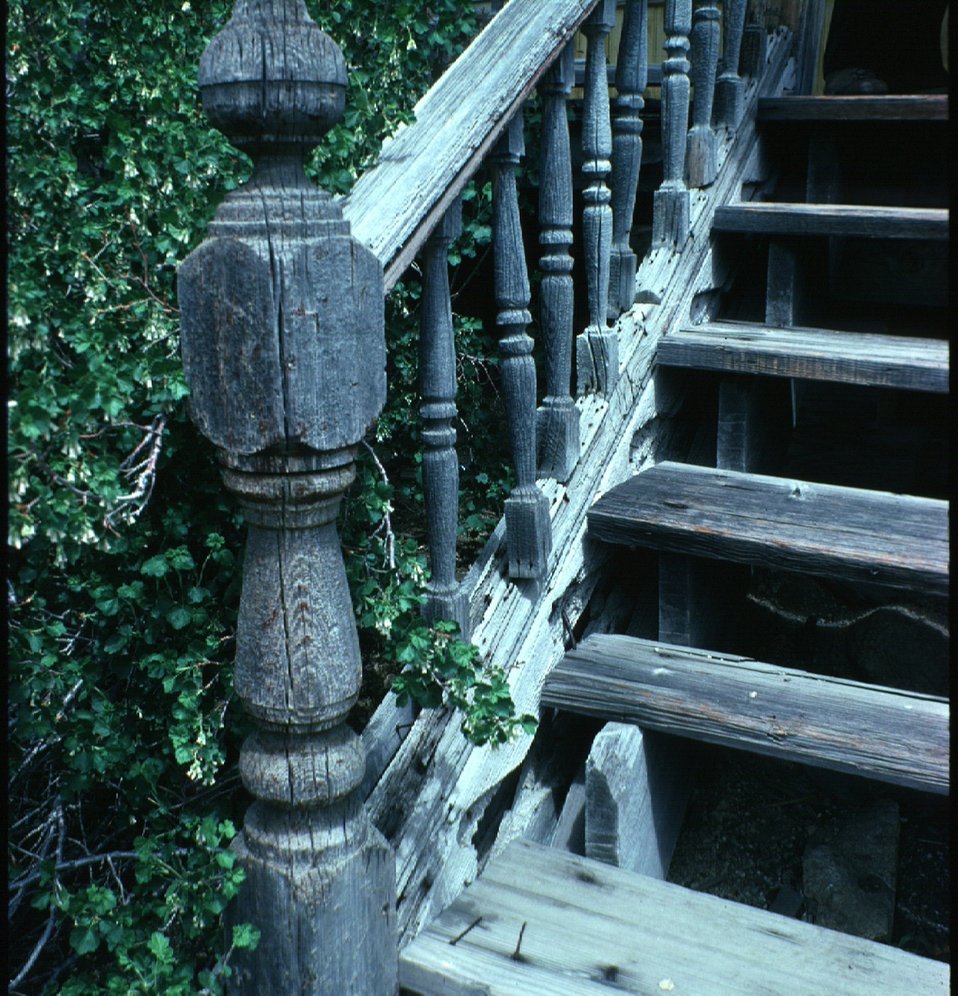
Silver City Archeology LSRD Lower Snake River District